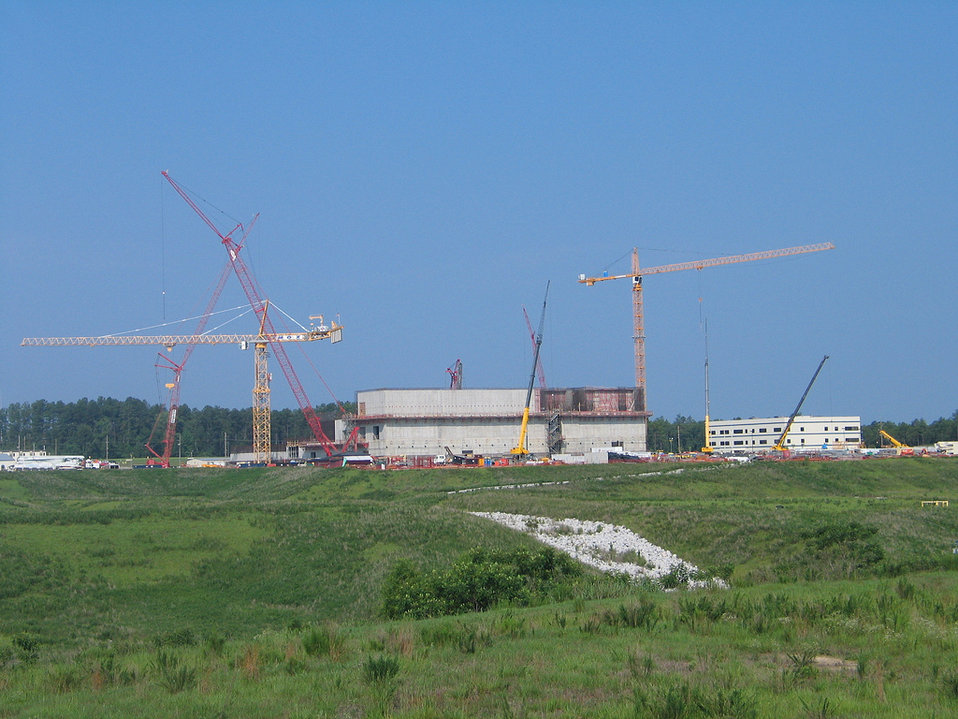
Shown is a ground view of the MOX Fuel Fabrication Facility construction project at the Savannah River Site, June 2010.